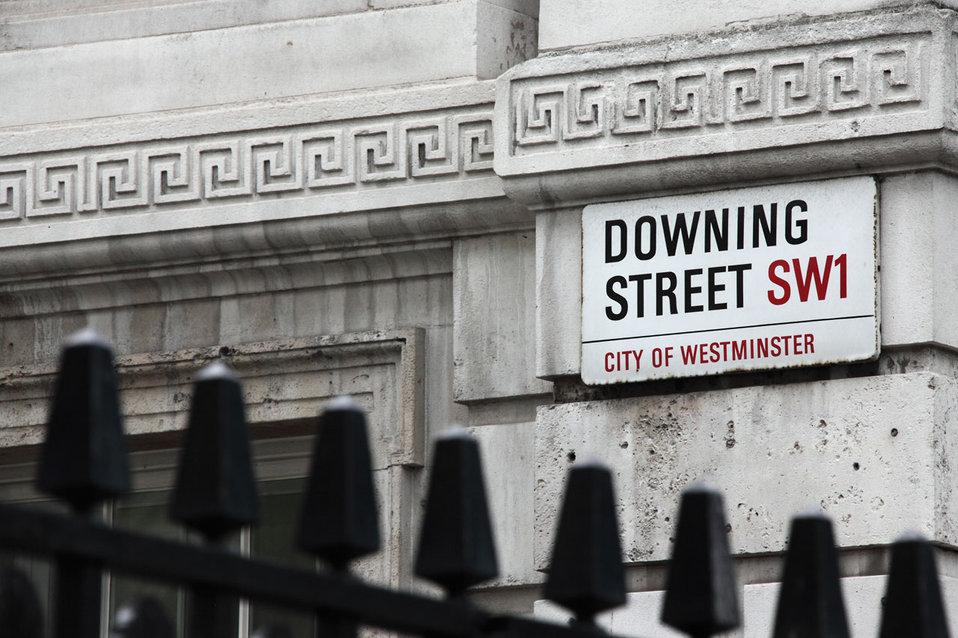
Downing street sign in london. a street where british prime minister lives..